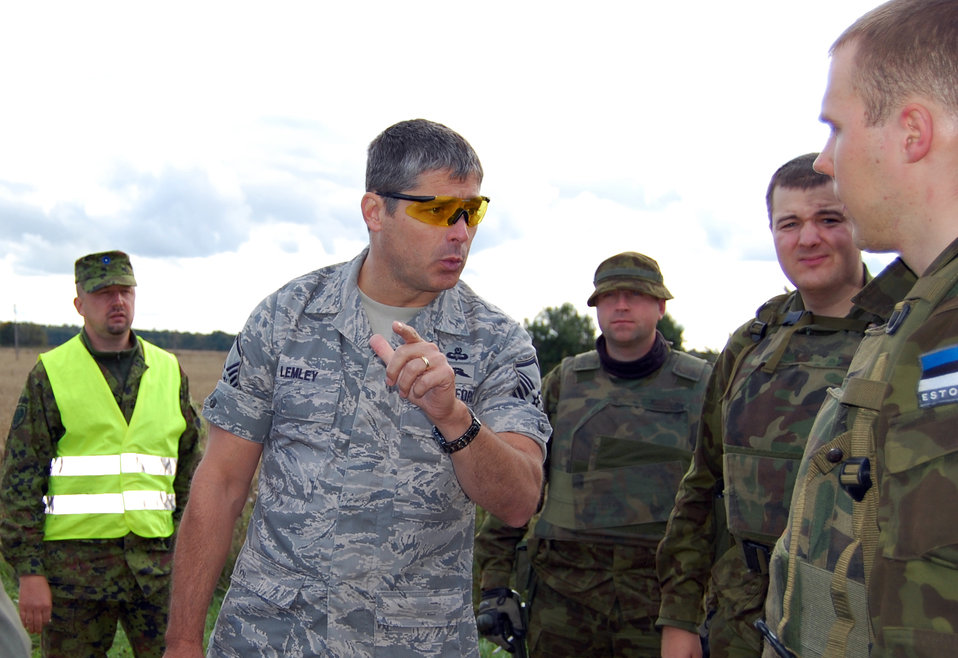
Lakenheath aircrews train with Estonian forward air controllers

Master Sgt. Jay Lemley provides feedback to Estonian forward air controllers after completing day two of NATO's Baltic Region Training Event IV Alpha Sept. 16, 2009, near Tallinn, Estonia. Sergeant Lemley is a joint terminal attack controller assigned to U.S. Air Forces in Europe's Operations Directorate Close Air Support Branch.